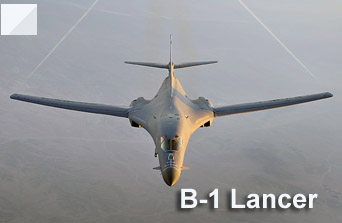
B-1 Lancer

A B-1B Lancer flies a combat patrol over Afghanistan in support of Operation Enduring Freedom. The B-1B has the capability to carry guided and unguided weapons and deliver massive quantities of precision and non-precision weapons against specific targets.